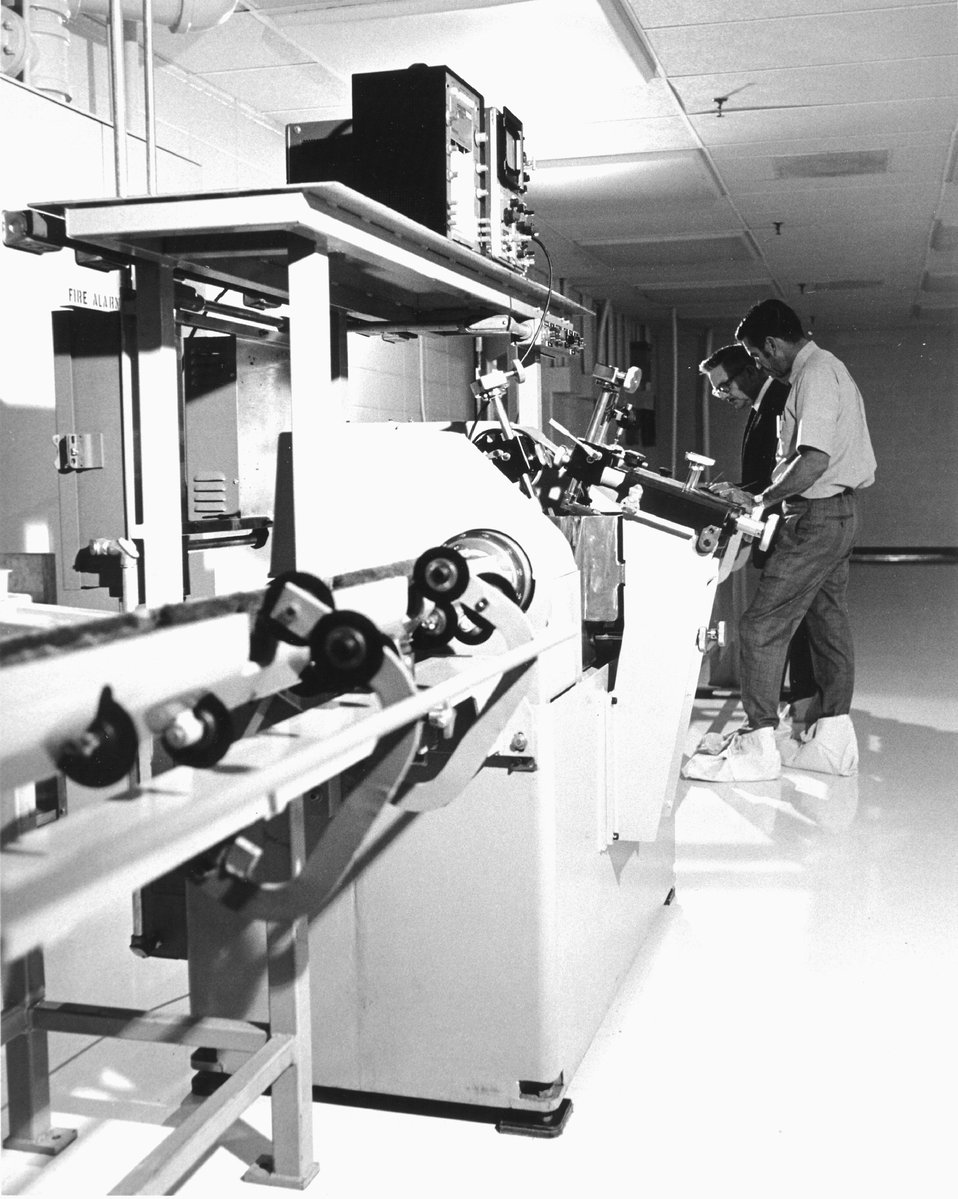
Quality check apparatus for FFTF fuel pins. c. undated